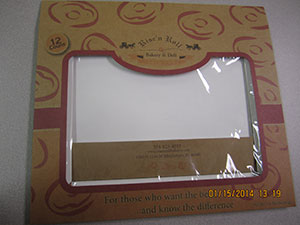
RECALLED – All Varieties of Donuts, Cinnamon Donut Holes, and Mixed Nut Candy

January 17, 2014 – Product Recall – Rise’N Roll Bakery Issues Allergy Alert on Undeclared Egg in All Their Donut Varieties and Undeclared Peanuts in Nutty Crunch.